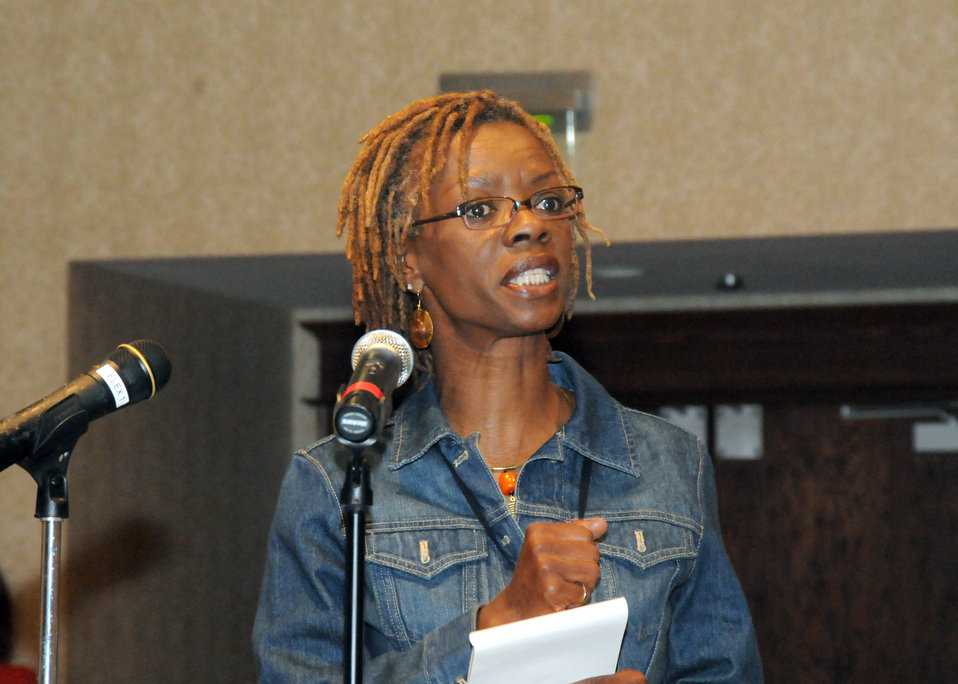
The U.S. Department of Agriculture (USDA) held the third of six Cultural Transformation Employee listening sessions in Kansas City, MO, on Wednesday, April 14, 2010. USDA employees expressed their concerns with issues at the Department and made suggestions for correcting them and improving the image of USDA. USDA photo 10di1309-147.